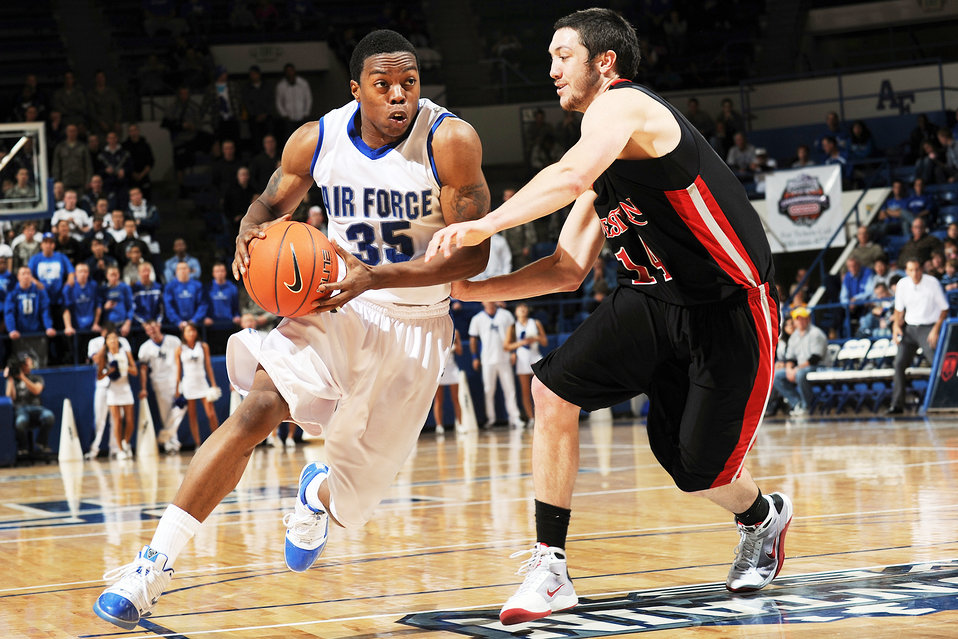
Falcons reign supreme in season opener

Western States Lachlan Kirwan attempts to steal the ball from Air Force Academy Falcon junior guard Evan Washington in their season opener at Clune Arena at the Academy near Colorado Springs, Colo., Nov. 13, 2009. The Falcons beat the Mountaineers 65-54.